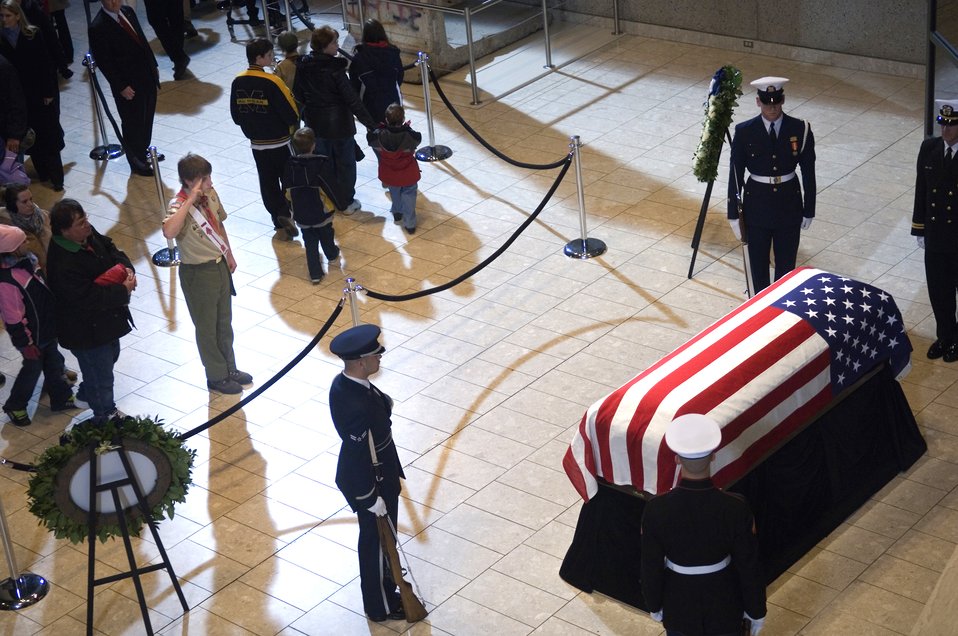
Honor Guard gives President Ford final honors

A Boy Scout salutes President Gerald R. Ford's body lying in repose while the Guard of Honor stands in formation at the Gerald R. Ford Presidential Library and Museum Jan. 2 in Grand Rapids, Mich.